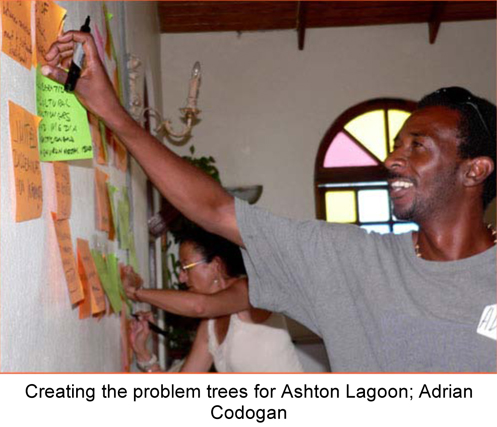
Workshop-Report-Ashton-Lagoon-Final